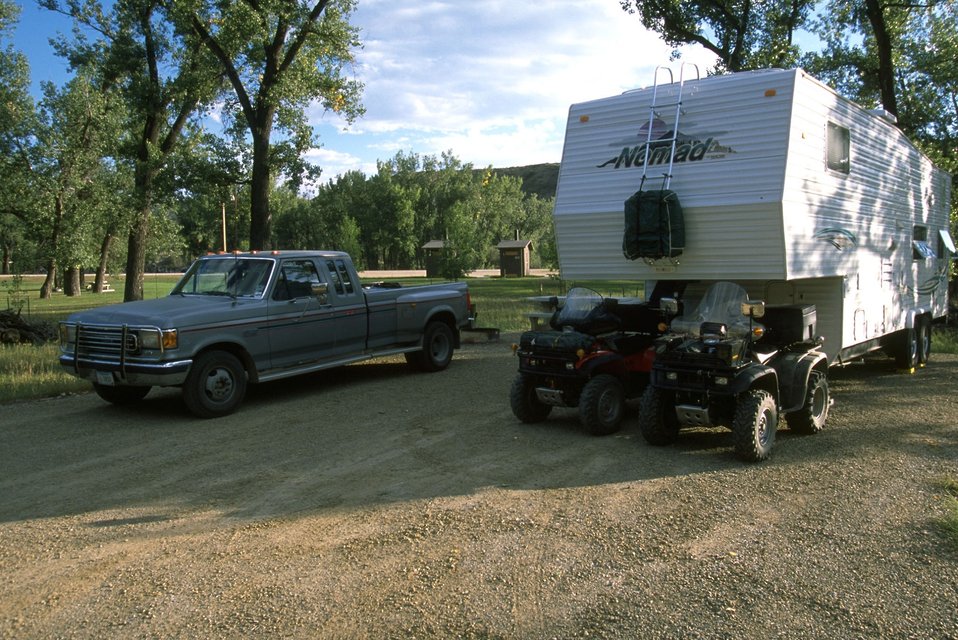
Kipp Recreation Area